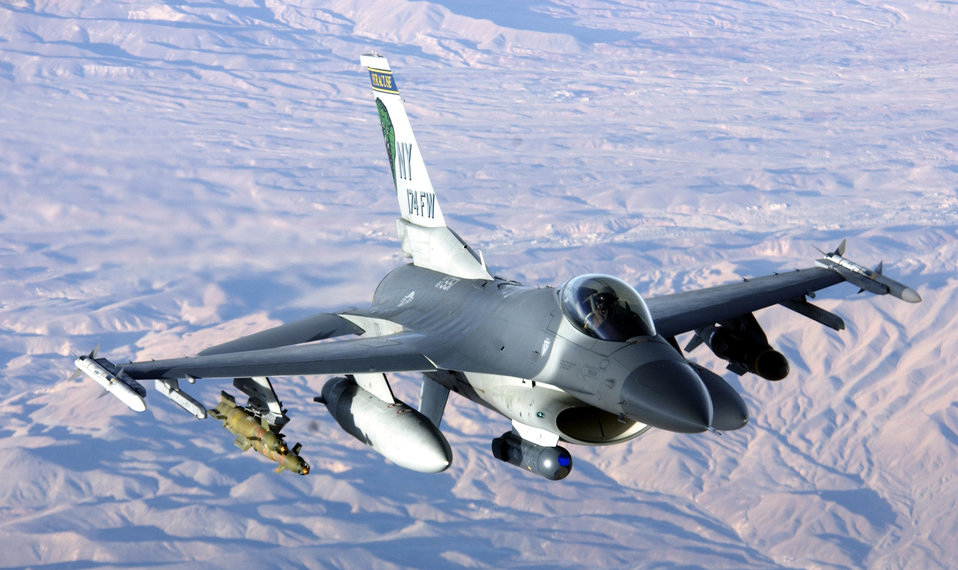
Hello from the New York

OPERATION ENDURING FREEDOM -- A F-16 Fighting Falcon from the 174th Fighter Wing, Syracuse, New York, soars over Afghanistan in support of Operation Enduring Freedom.